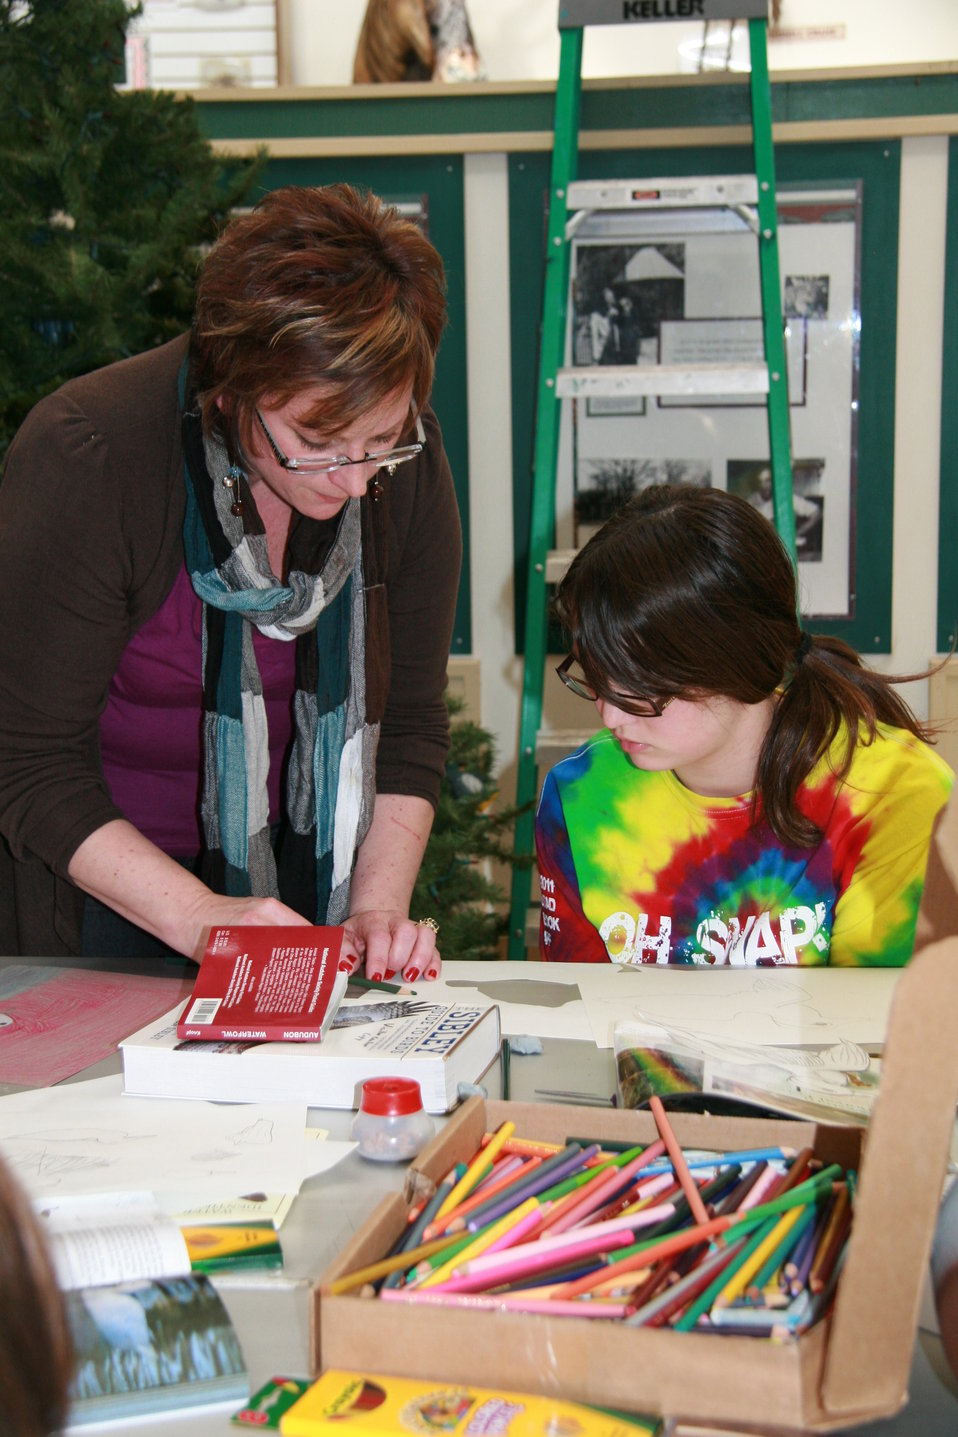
North Dakota Jr. Duck Stamp Program

Students learned about the lands acquired by the sales of Federal Duck Stamps and the many opportunities to observe waterfowl and see wetland habitat on National Wildlife Refuges.